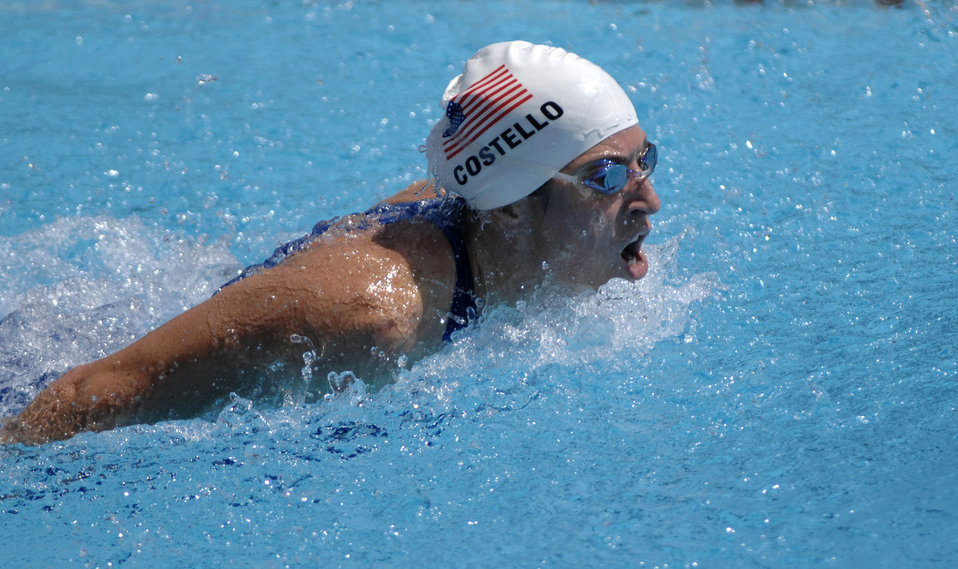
Americans compete in Military World Games

First Lt. Katie Costello competes in the 100-meter butterfly race during the Military World Games competition Oct. 15 in Hyderabad, India. The Conseil Internationale du Sport Militaire's Military World Games event is the largest international military Olympic-style event in the world. In this year's fourth edition of the games, 103 countries and more than 5,000 athletes are scheduled to compete Oct. 14 from 21 in boxing, diving, soccer, handball, judo, military pentathlon, parachuting, sailing, shooting, swimming, volleyball and track and field. The purpose of the Military World Games is to promote friendship through sport.